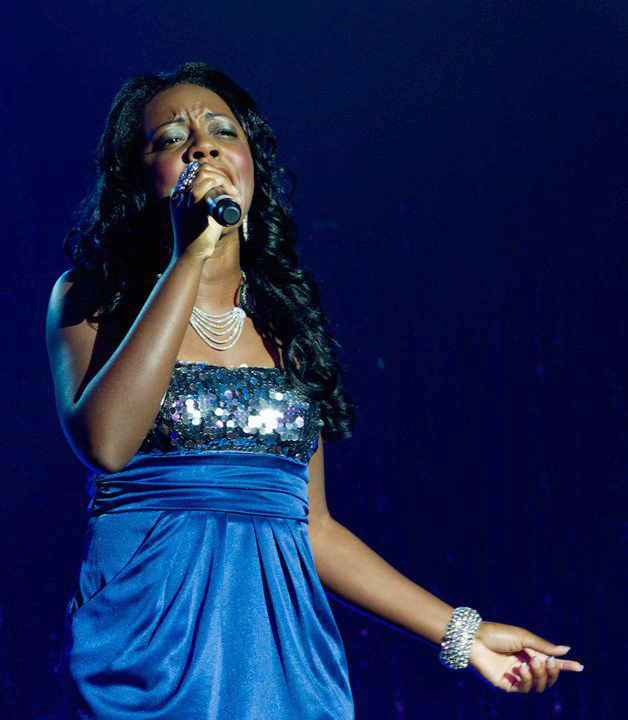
Airmen win honors at worldwide talent search

Staff Sgt. Rosalyn Moody performs her final stage audition Dec. 10, 2010, during the Tops in Blue Worldwide Talent Competition at Lackland Air Force Base, Texas. Sergeant Moody is a cargo processing supervisor from the 436th Aerial Port Squadron at Dover Air Force Base, Del.